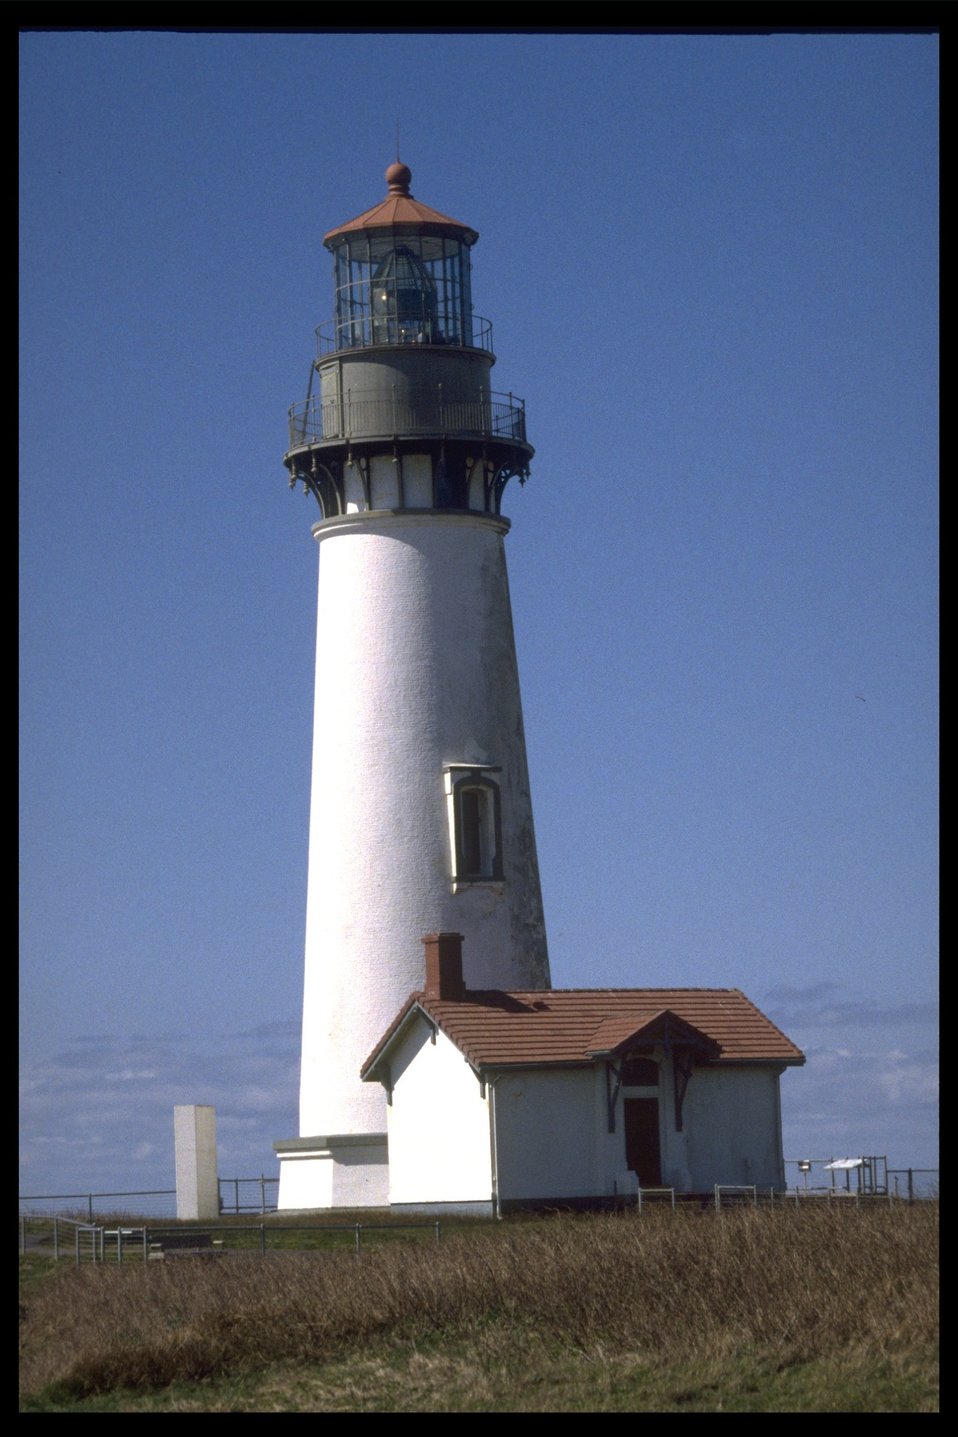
Yaquina Head Lighthouse.